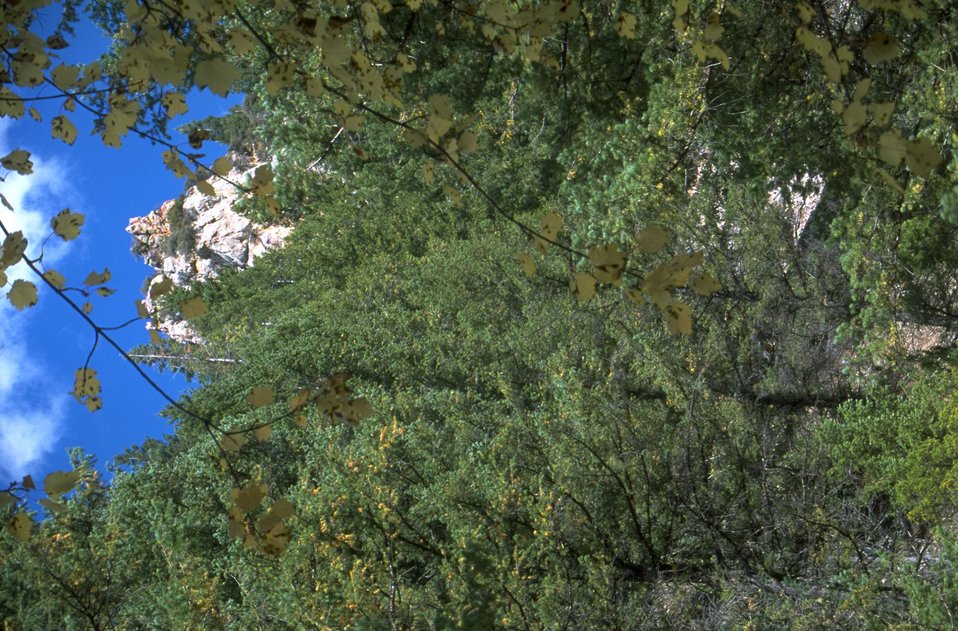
Craggy peak in Centennial Mountains (vertical)